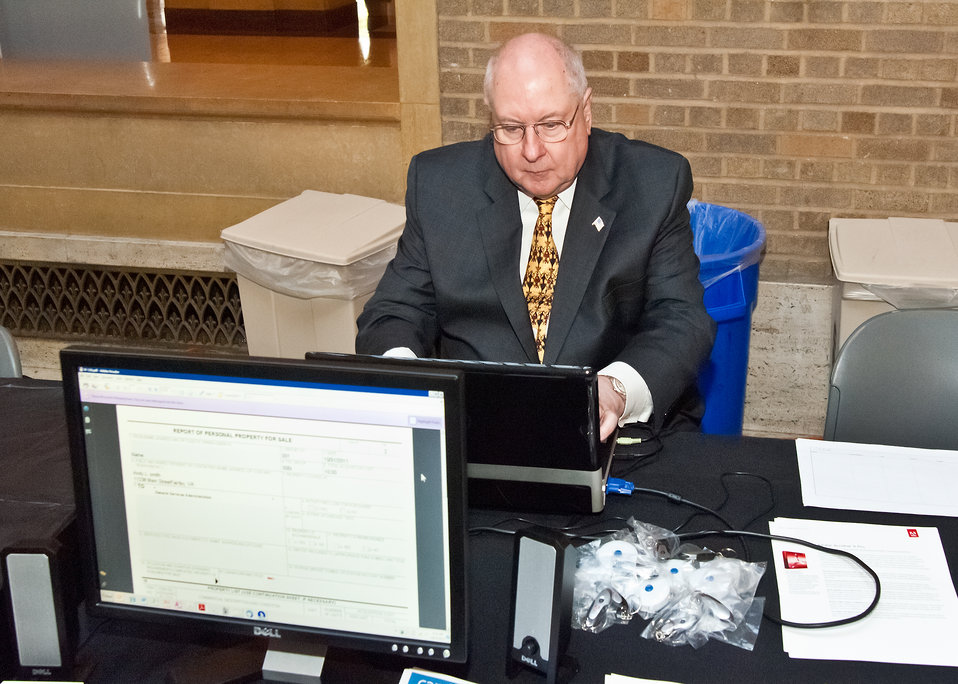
Vice President, Information Analysis Incorporated an information analysis solution partner with Adobe Software that designs forms for the Federal government to be Section 508 compliant Albert Weisner demonstrates the operation of their software at the U. S. Department of Agriculture (USDA) Section 508 and Disability Awareness Program in Washington, DC, on Monday, Oct. 31, 2011. Sponsored by the Office of the Chief Information Officer, the theme of the event was, “Turning the Key to Unlock and Eliminate Barriers by Providing Accessibility to All.” Section 508 applies to the development, procurement, maintenance or use of electronic and information technology allowing accessibility and awareness to promote inclusiveness to employees and the public with disabilities to information technology managed by the Federal government. Section 508 is part of the USDA’s Cultural Transformation Initiative to hire more employees with disabilities.